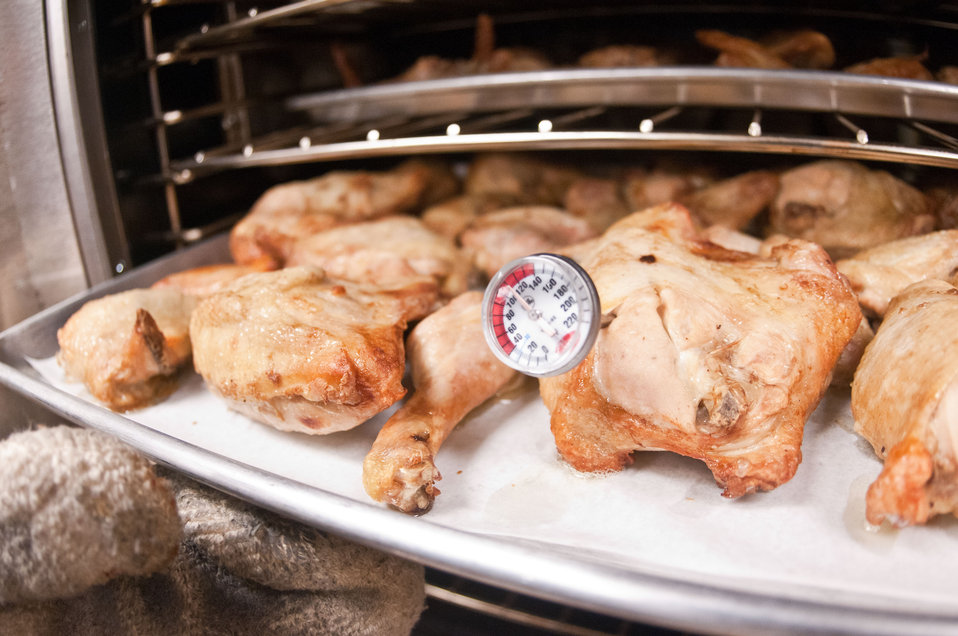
Roasted chickens are temperature checked for doneness to 165-degrees, at Nottingham Elementary School in Arlington, VA, on Wednesday, October 12, 2011.